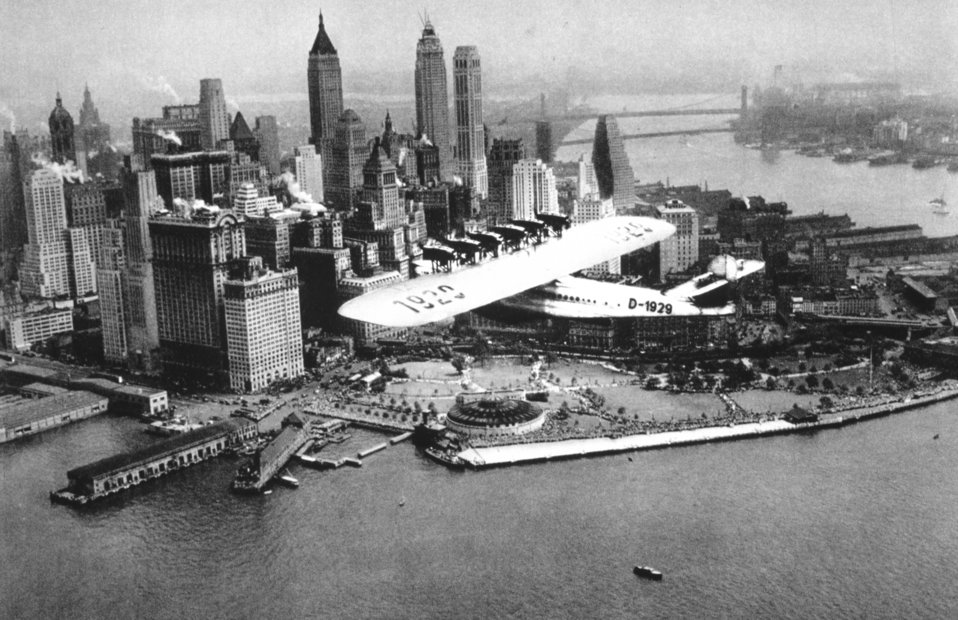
A flying boat cruising by Battery Park at the south end of Manhattan Island. In: 'Flug Und Wolken', Manfred Curry, Verlag F. Bruckmann, Munchen, 1932.